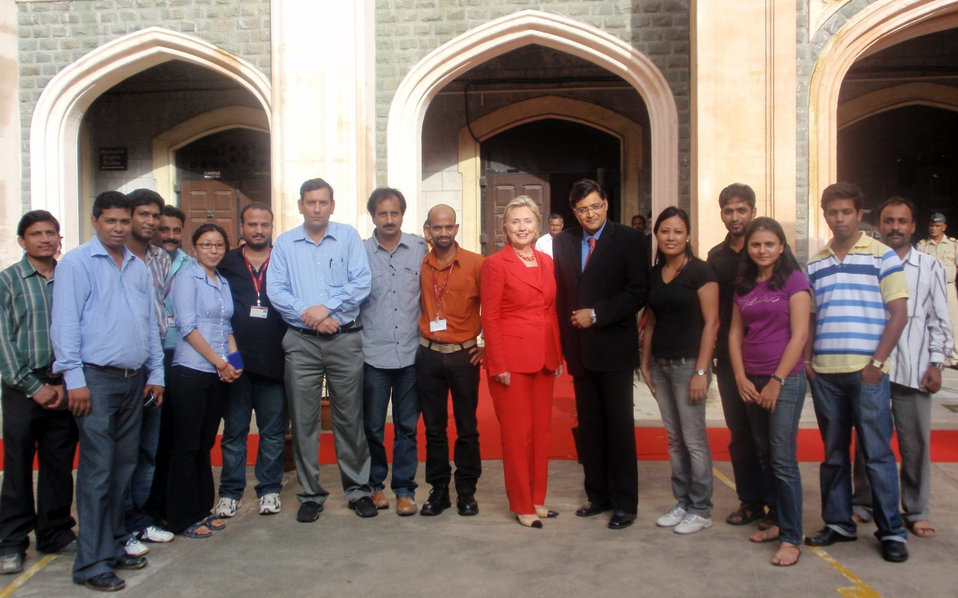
Behind the Scenes: Times Now Interview

Times Now Anchor Arnab Goswami and his production staff pose for a photo following an interview with U.S. Secretary of State Hillary Rodham Clinton in Mumbai, India July 18, 2009.